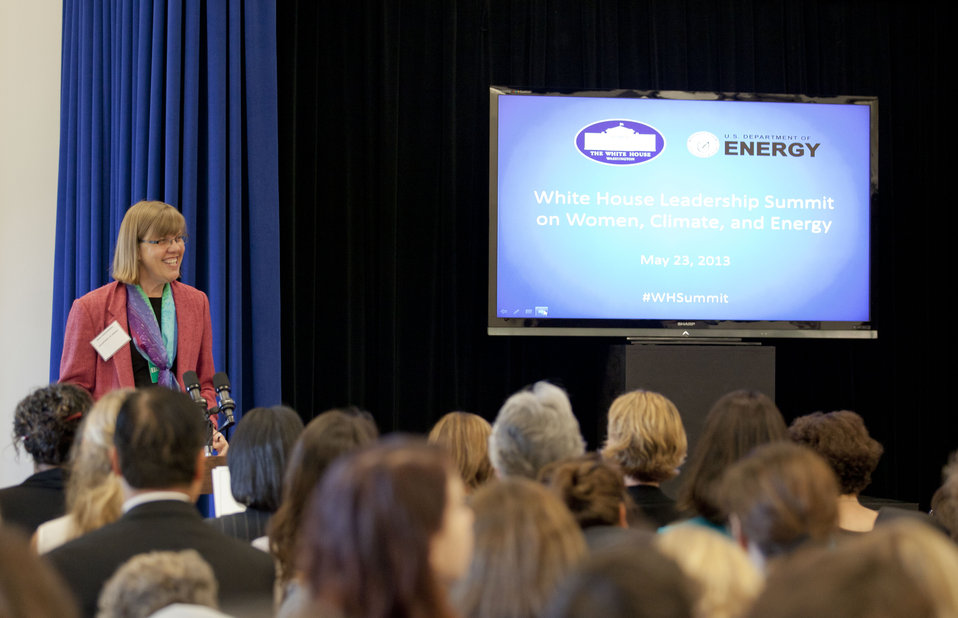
White House Leadership Summit on Women, Climate and Energy